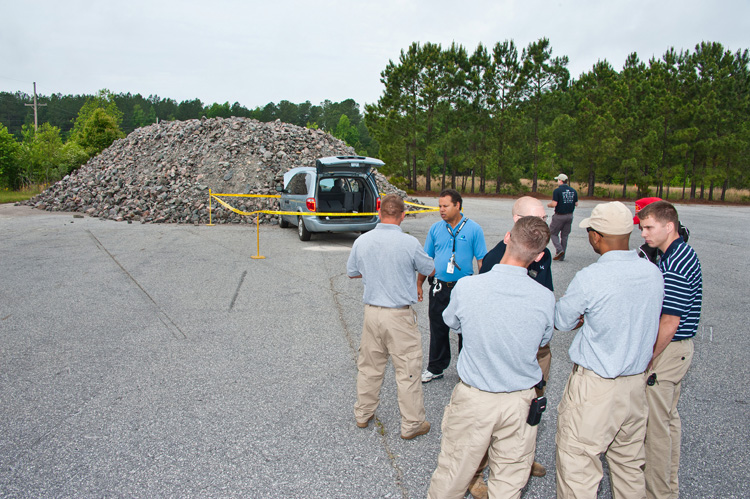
EXPERTS TESTS AGENCIES’ SKILLS AT RADIOLOGICAL DETECTION AND CONTROL

A team made up of participants from the North Carolina and Georgia National Guard Civil Support Teams prepare to investigate the car, as the SRS employee playing the role of the local police officer provides information (SRNL photo).

It was all part of an exercise conducted by the U.S. Department of Energy’s Savannah River National Laboratory (SRNL) on behalf of the Department of Homeland Security’s Domestic Nuclear Detection Office (DNDO). The goal was to challenge state and local agencies’ abilities to protect the public by detecting radioactive materials and responding appropriately in a variety of controlled, but realistic, scenarios.